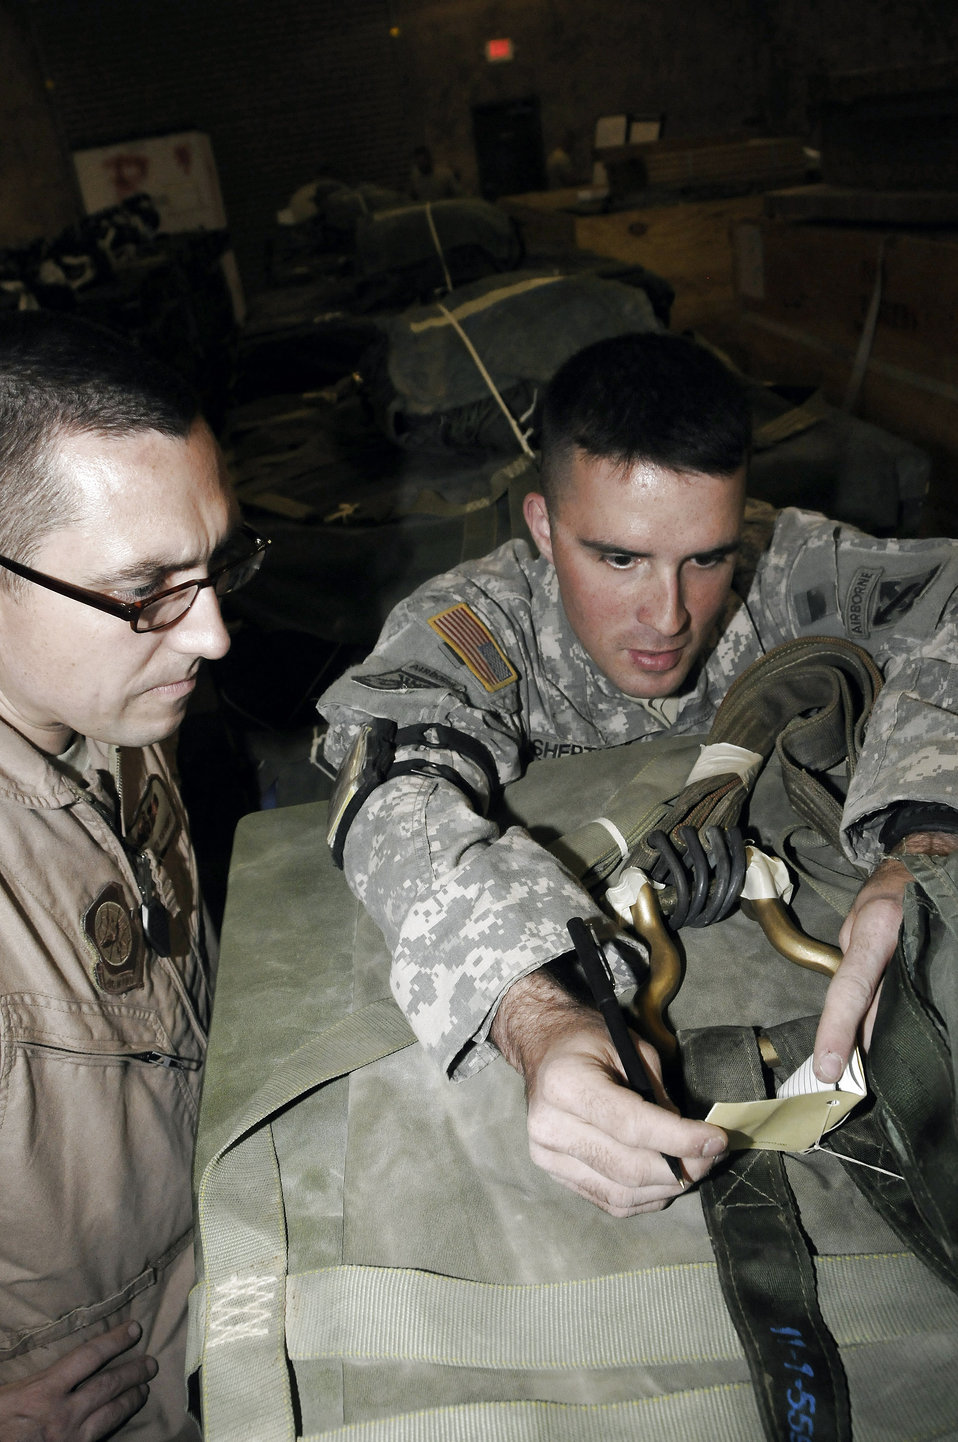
Operations Iraqi Freedom, Enduring Freedom and Joint Task Force-Horn of Africa

Army Sgt. Joshua Sheptock shows Tech. Sgt. Keith Hackney pertinent information inside of a parachute log book Dec. 6 at an air base in Southwest Asia. This joint inspection was performed to ensure the container delivery system was rigged correctly so it can be used to drop supplies in the area of responsibility. Sergeant Hackney is a C-17 Globemaster III joint airdrop inspector and is assigned to the 816th Expeditionary Airlift Squadron. Sergeant Sheptock is a parachute rigger assigned to the 824th Riggers.